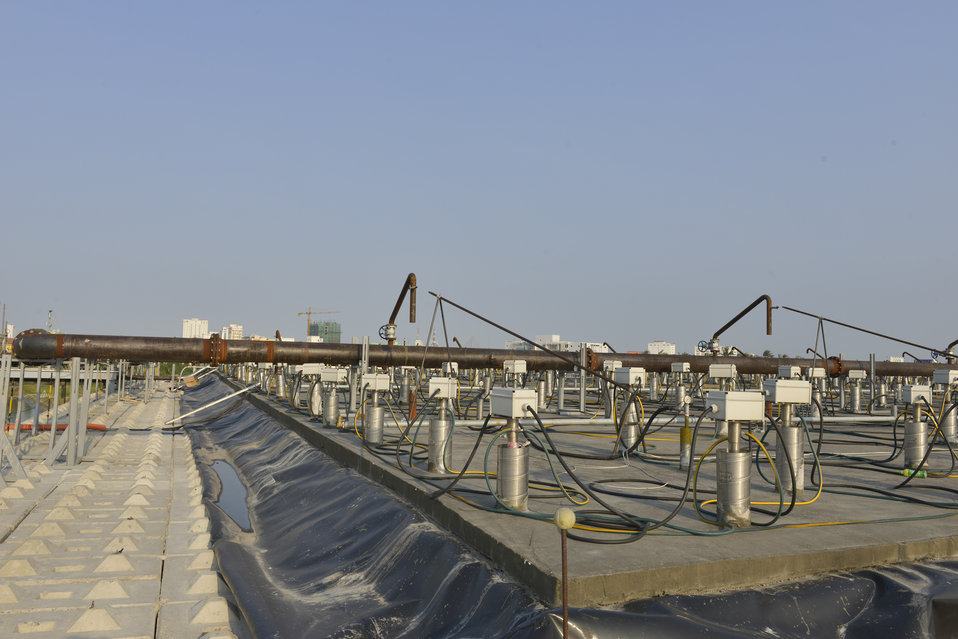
The containment and treatment structure at the Danang Airport Project site.

Heating elements have been installed into the heater wells that are drilled throughout the containment structure, and power cables have been installed to connect the treatment system to the electrical substations adjacent to the containment structure.

March 24, 2014.